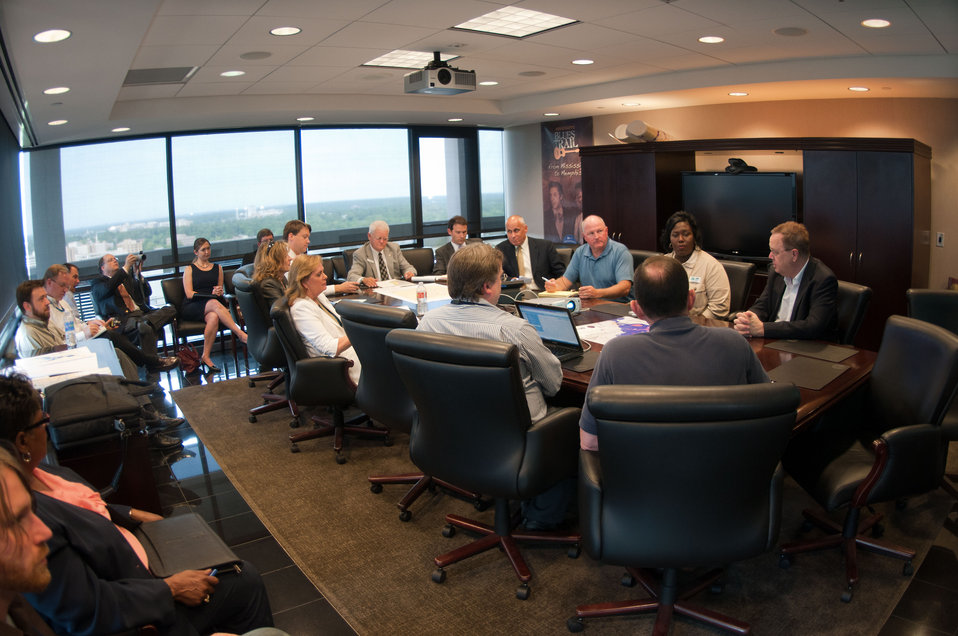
Agriculture Undersecretary for Rural Development Dallas Tonsager (right) clarified the intent and resolve of USDA to be involved in the emergency housing needs of people who were flooded by the Mississippi River system.